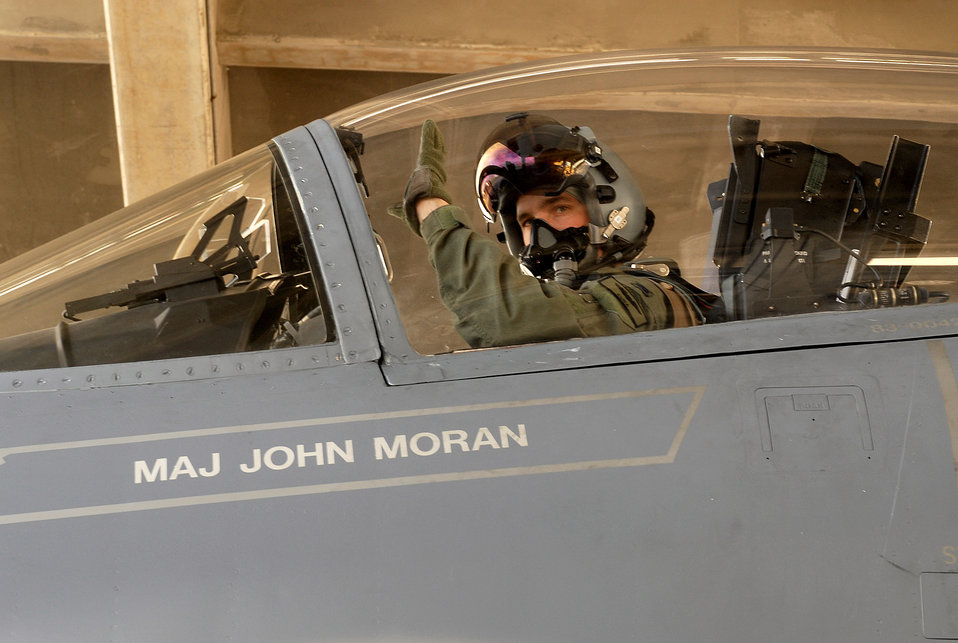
Valiant Shield exercise brings services together

F-15 Eagle pilot 1st Lt. John Fischer waves before taking off from Kadena Air Base, Japan, Aug. 5 to fly to Guam. He will be one of more than 22,000 servicemembers taking part in the joint exercise Valiant Shield which runs through Aug. 14. Lieutenant Fischer is from the 44th Fighter Squadron.